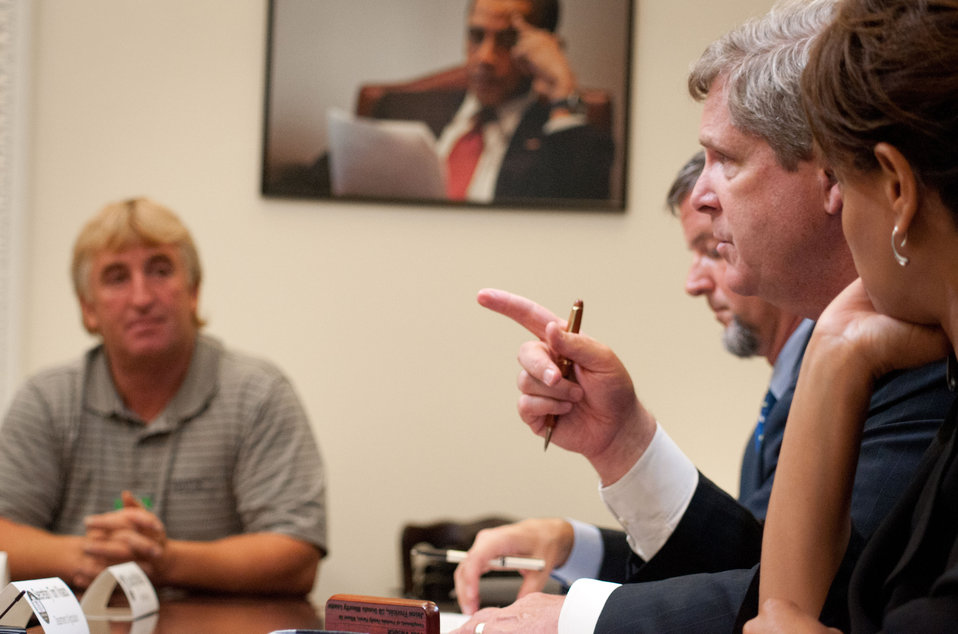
Glen Young (left), Young’s Greenhouse, ME, listens as Agriculture Secretary Tom Vilsack (second from right); make several points during their meeting at the White House, in Washington, DC, on July 6, 2011. Glen and his wife Jacqueline, were asked to participate along with President Barack Obama, Agriculture Secretary Tom Vilsack, the President's Domestic Policy Adviser Melody Barnes (right), Senior Policy Advisor for Rural Affairs at the White House Domestic Policy Council Doug McKalip (third from right), and rural communities leaders from across the country for the White House Rural Champions of Change event to strengthen rural communities and promote economic growth. A five-generation family farm, Young’s Greenhouse was severely damaged in a tornado. Since the early 1900s, Young’s Greenhouse has been family owned and operated providing vegetables and flowers to the community. The tornado ripped through the families 300 plus acres destroying all of their greenhouses and numerous outbuildings that support their livestock operation. The Young’s sought the help of the USDA Farm Service Agency’s Emergency Loan Program, which provides assistance to help producers recover from production and physical losses due to natural disasters. With this loan the Young’s were able to pay off the major bills incurred during reconstruction. Since then with the help and support of their family, friends and the community the Young’s have rebuilt eight greenhouses making them extra long and additionally they added one 30’ x 300’ cold frame greenhouse.